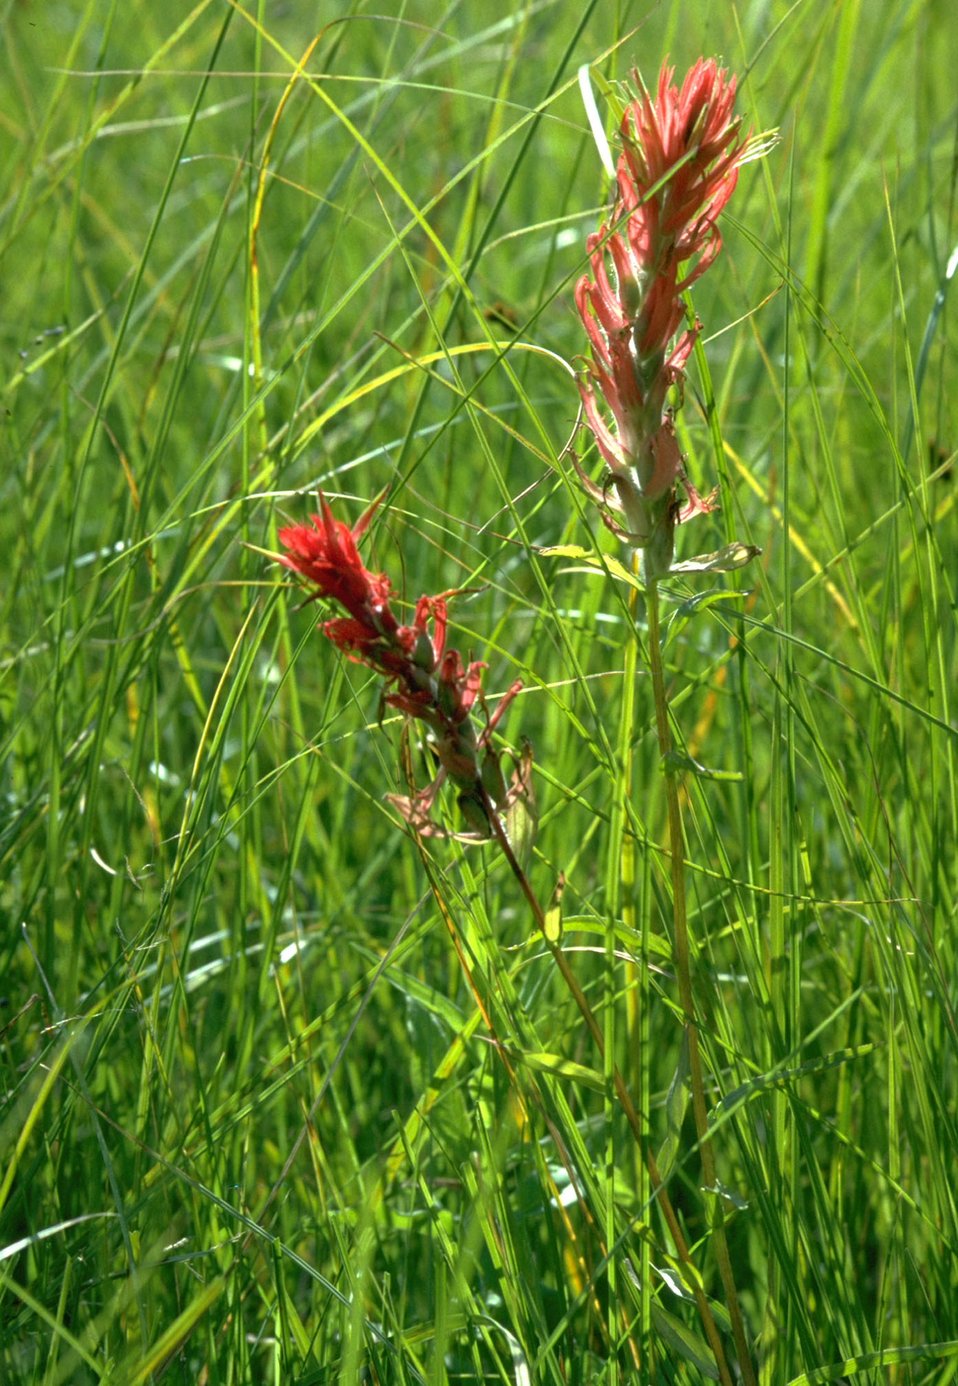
Indian Paintbrush in grass